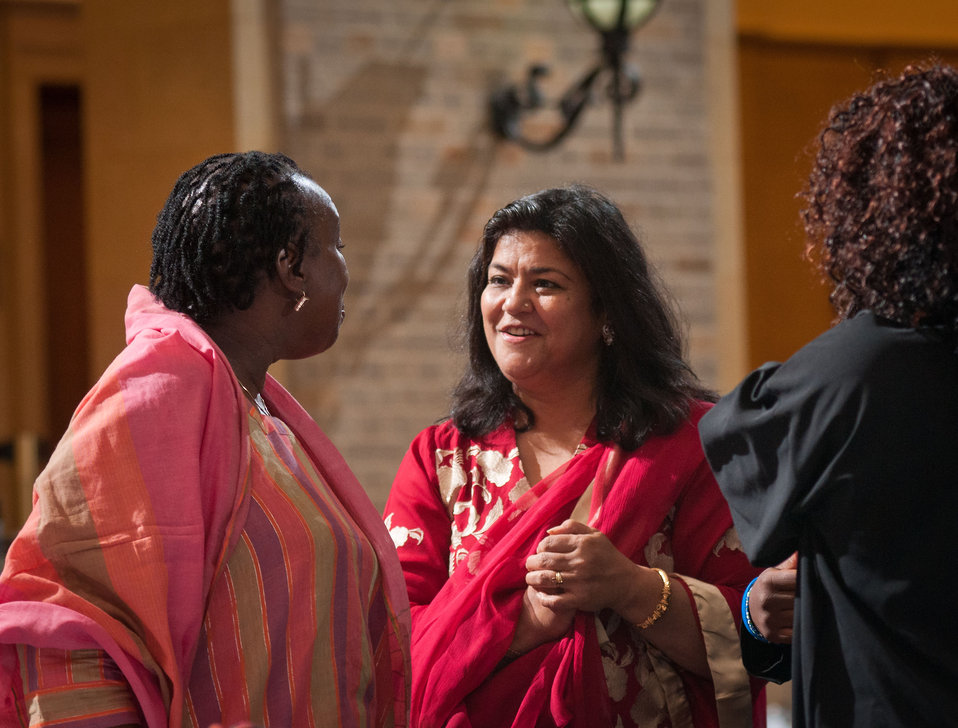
Guests meet and network during the Iftar celebration, co-sponsored by the U.S. Department of Agriculture, U.S. Agency for International Development (USAID) and Islamic Relief USA, on Tuesday, August 7, 2012, in the USDA Whitten Building, in Washington, D.C. Ramadan is the month of fasting, intensive prayer, sacrifice and worship for Muslims around the world. Throughout this month, Muslims fast during the day, abstaining from consuming food from dawn to dusk and using this time to purify spiritually. Fasting reminds Muslims of the poverty and hunger suffered by many in the United States and worldwide. It is a connection with those who are hungry not through devotion, but through the many global factors that lead to hunger and famine. Iftar is the meal at which Muslims break their fast at sunset, usually by eating dates, according to the Prophetic tradition.